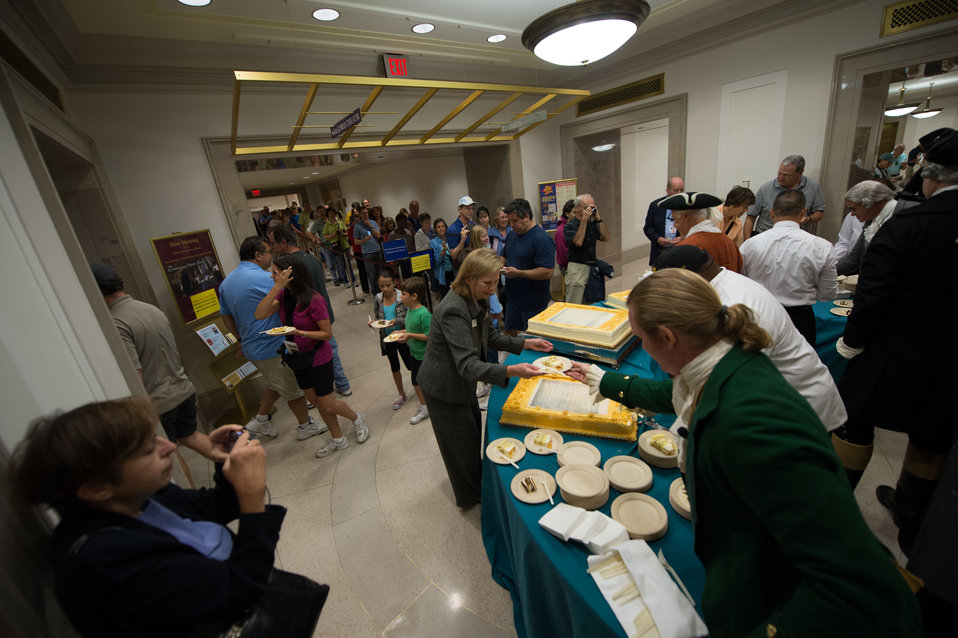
Serving cake